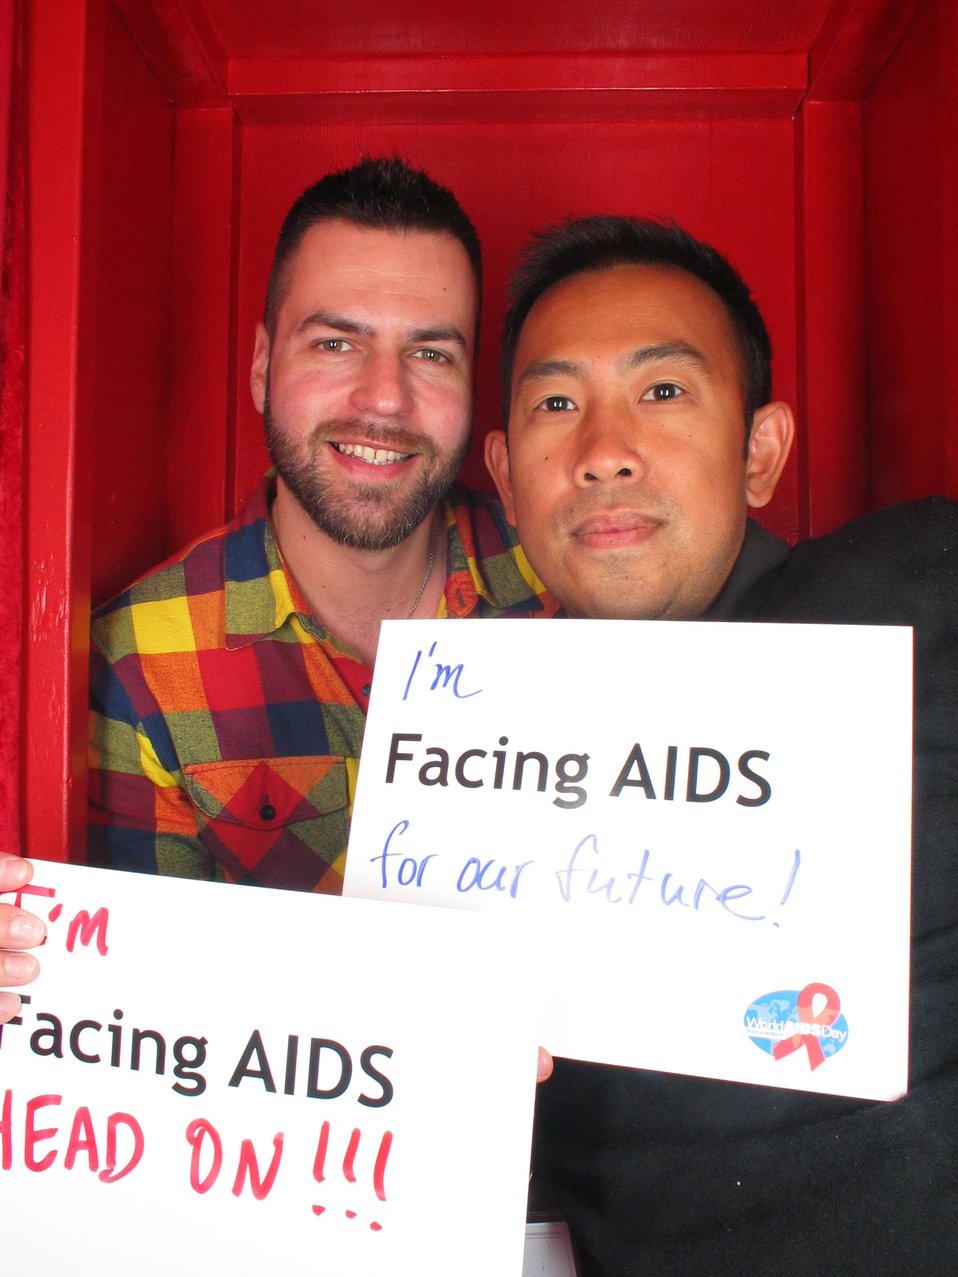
I'm Facing AIDS for our future! I'm Facing AIDS head on!!!